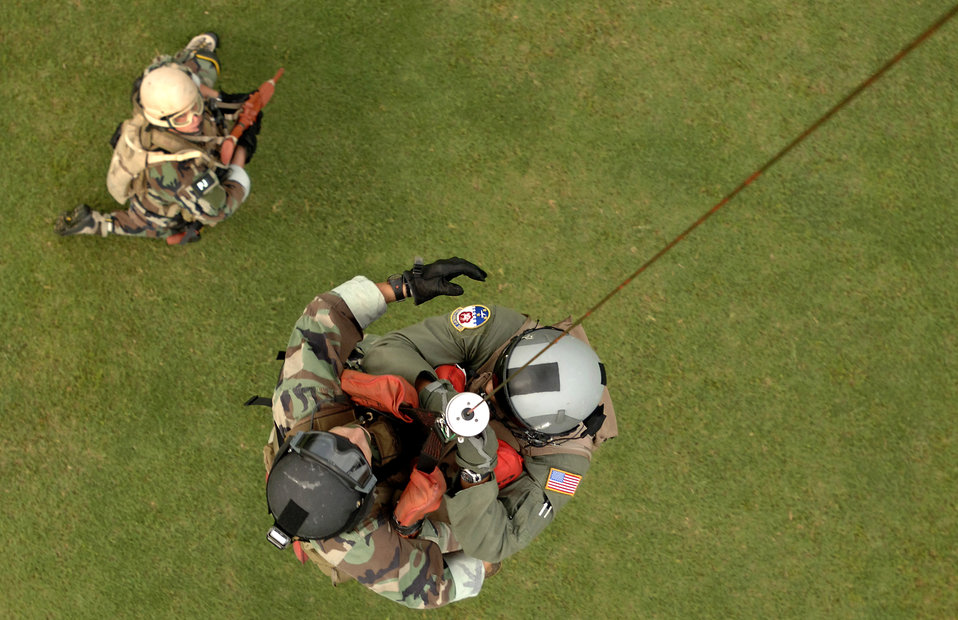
Airmen visit schools as part of Air Force Week Atlanta

Master Sgt. John Shiman (left) watches fellow pararescuemen Senior Airmen Rich Boyd hoist a downed pilot into a hovering HH-60G Pave Hawk helicopter. The simulated rescue was conducted during an Air Force Week Atlanta event Oct. 9 at Marietta High School in Marietta, Ga. The event helped to educate students about the U.S. Air Force.